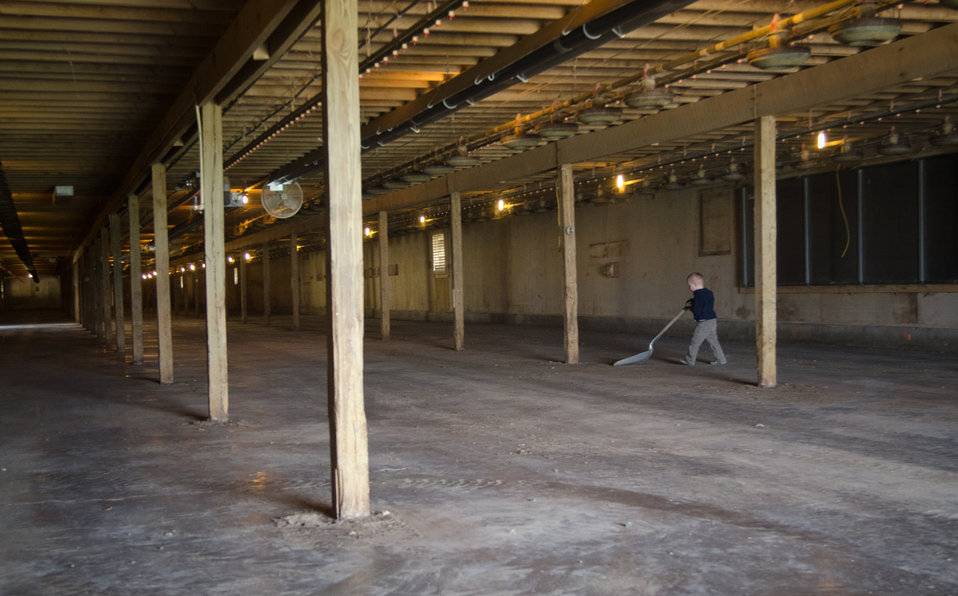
Grant Molnar (5) uses a shovel to scour the floor for debris at the Roxanne Molnar farm on Thursday, April 21, 2011, in Grantville, PA. Roxanne and Matthew Molnar have an 80,000 chicken farm and were recipients of a $20,000 Rural Energy for America Program (REAP) grant. The money is a portion of the cost to modernize the second of two 40,000 chicken capacity chicken houses. Chickens need to be kept at a comfortable temperature to remain productive. New radiant heaters keep the chickens warm during Pennsylvania winters. On warm days, ceiling vents provide passive venting of heat out of the building; when chicken house temperatures are estimated to be above 90 degrees, fans come on, pulling air through water evaporator elements lowering air temperature down 10-15 degrees and flows along the chicken house's length, in effect a tunnel of cooled air. The benefits to the chickens are heat and excess moisture removal; minimized dust and odor; limits buildup of ammonia and carbon dioxide; and provides oxygen for respiration. All these systems are computer controlled allowing owner, Roxanne Molnar to run the farm by herself and raise two small boys Gavin (2) and Grant (5). Husband, Matthew works off the farm and frequently travels, so along with the demands of parenting and manually controlling fans, vents, and having to remove the 80,000 chickens from their feeders and moving them around to cool them was an increasingly daunting task. The computer controls of the new system automate many of the daylong tasks allowing the Molnar’s to run their family farm. USDA Photography by Lance Cheung.